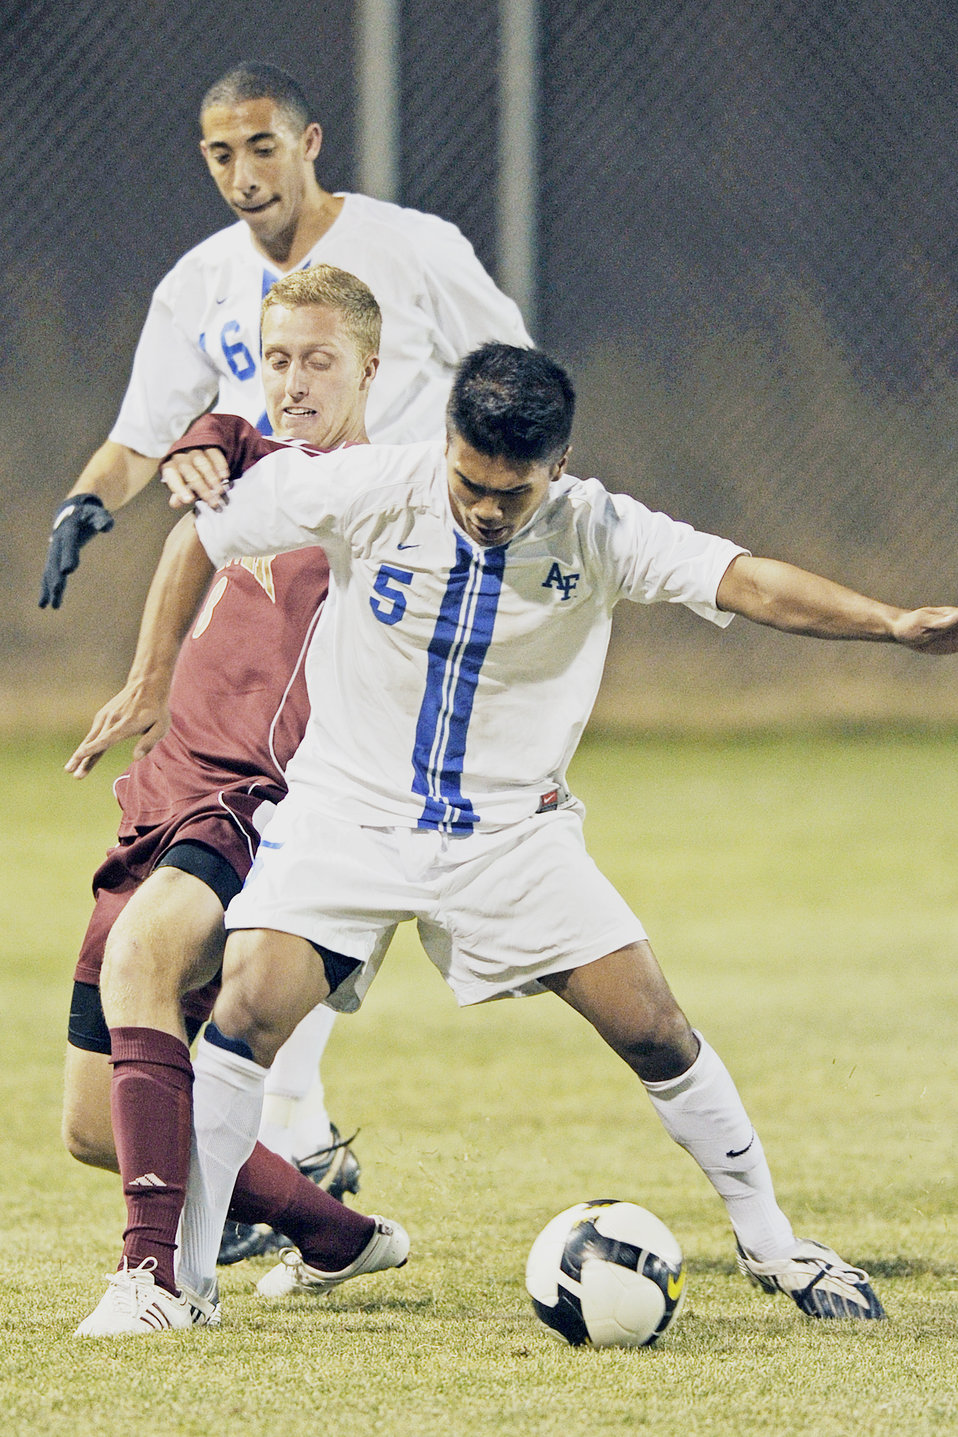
Air Force Academy

U.S. Air Force Academy, CO -- Freshman forward Zane Dydasco gains control during action against the University of Denver at the Cadet Soccer Stadium Nov 7. Denver defeated the Falcons 2-0 in the regular-season finale for both teams. The Falcons fell to 7-8-1, and 2-5 in league play. The two teams will meet again in five days in the first round of the MPSF tournament on Nov 12 at the University of Denver Stadium. Air Force finished the season with a 5-1-1 record at home, and honored its seven seniors in a pre-game ceremony celebrating the final home game of their career.